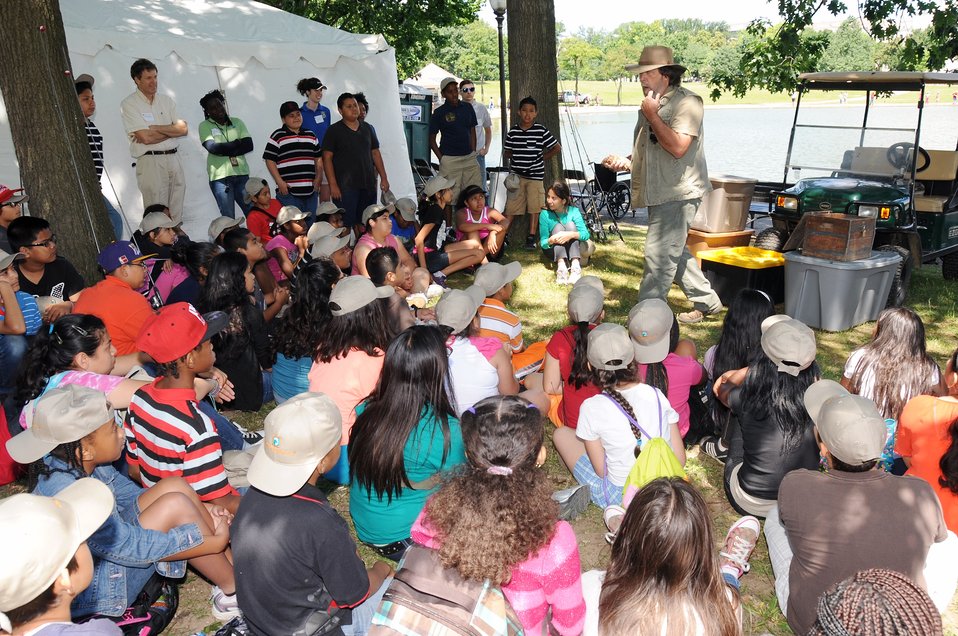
Reptiles revealed!

Fishing wasn't the only activity that day. Kids learned all about reptiles, too!